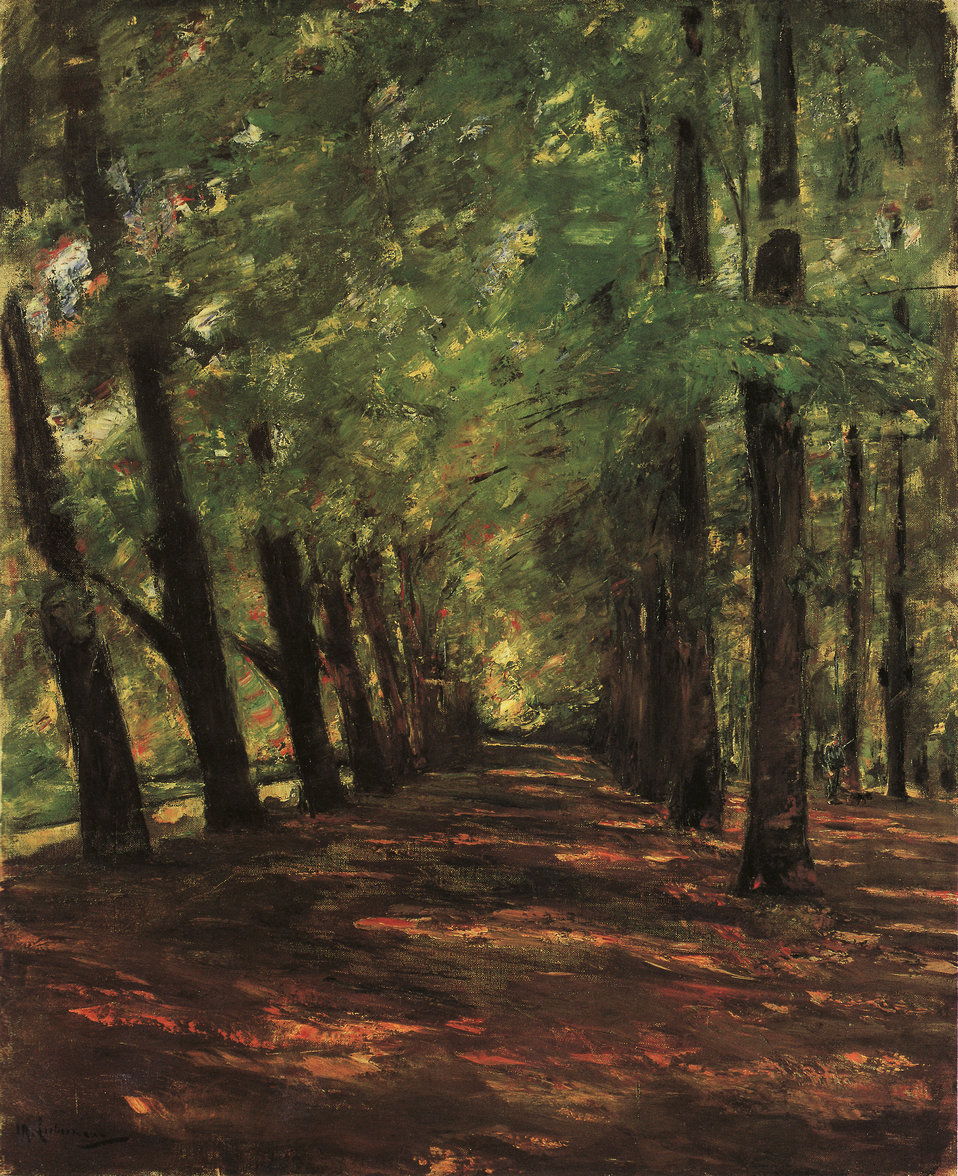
Allee in Overveen